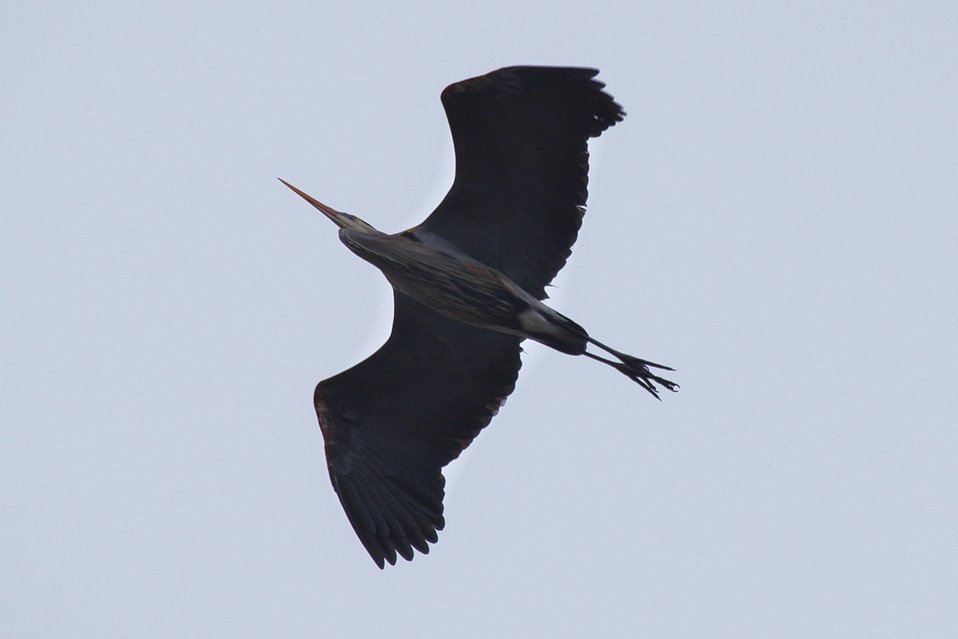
Great blue herons

Missisquoi NWR hosts one of the largest nesting populations of great blue herons on Lake Champlain.